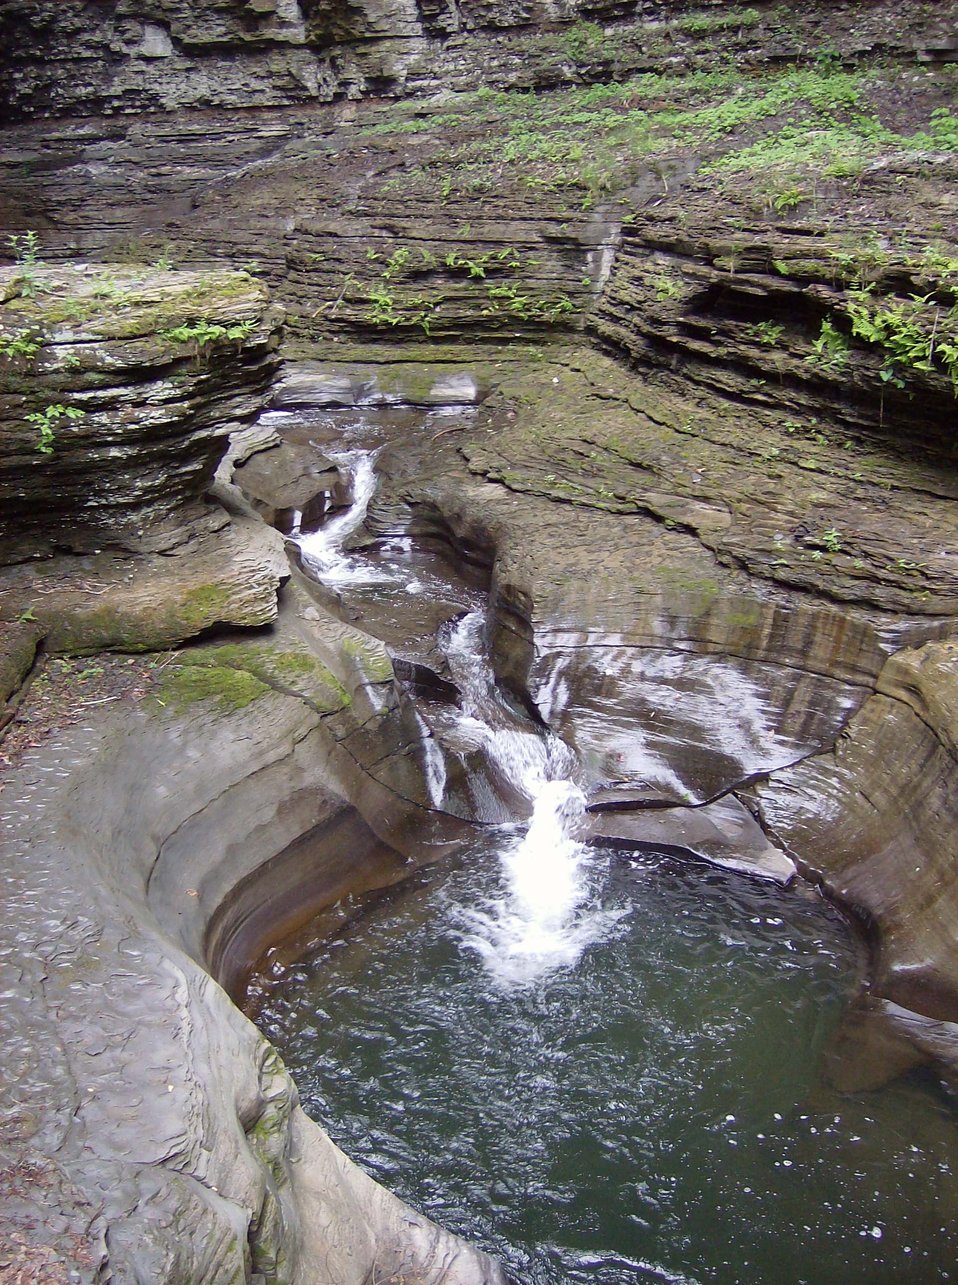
Babbling stream flowing into a bowl-like pool at Watkins Glen State Park.